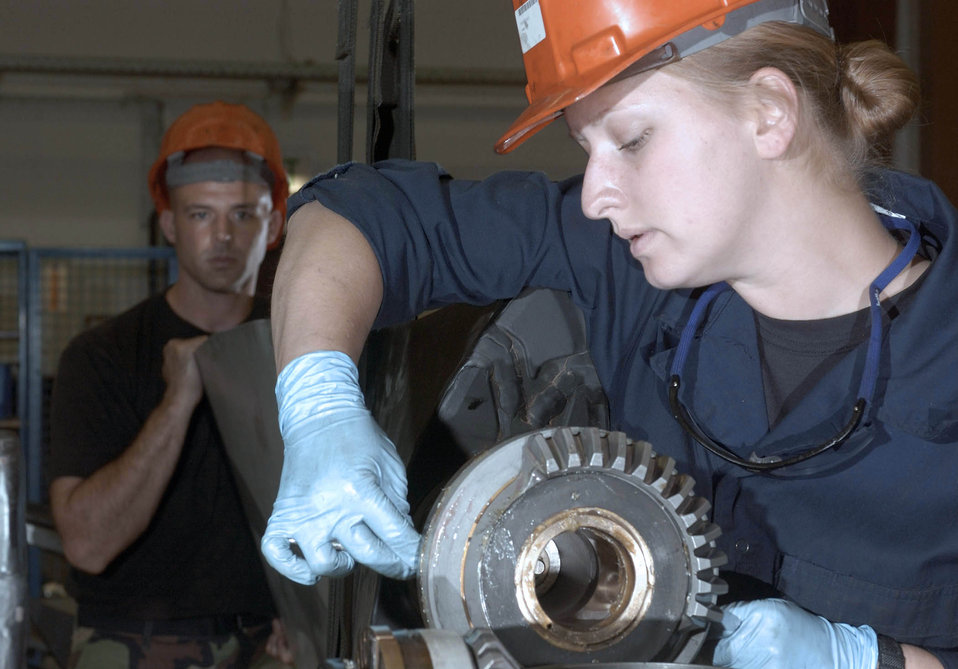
Herculean engine

RAMSTEIN AIR BASE, Germany -- Senior Airman Jeffrey Perry (background) holds a C-130 Hercules propeller while Senior Airman Amanda Shetley secures it into position. The 86th Maintenance Squadron's propulsion flight here is the focal point for any C-130 engines needing repairs in Europe or those deployed supporting operations Iraqi Freedom and Enduring Freedom.